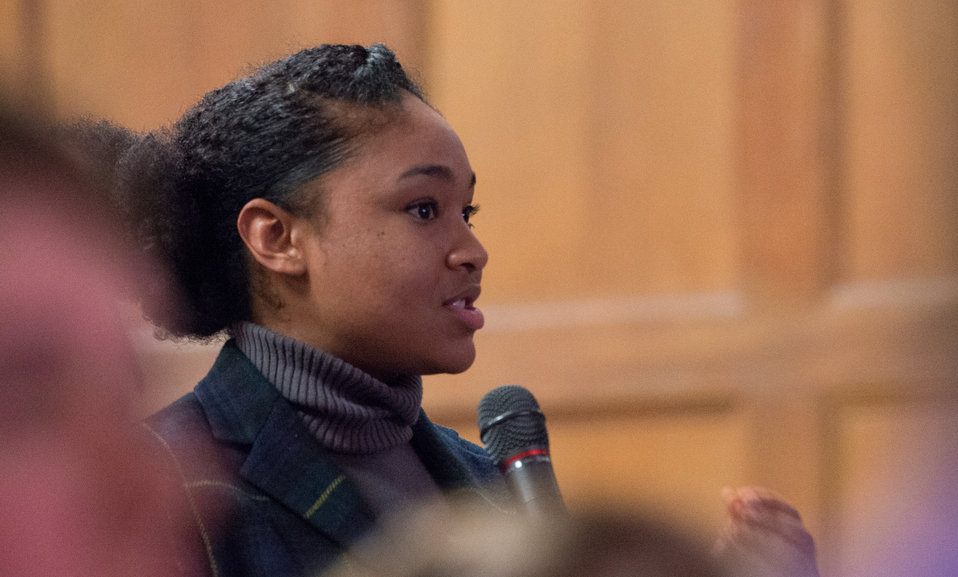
A student poses a question to the discussion panels at he Borlaug Symposium commemorating the late Dr. Norman Borlaug's 100th Birthday and vision, held in the Jefferson Auditorium of the U.S. Department of Agriculture (USDA) in Washington, D.C. on Tuesday, Mar. 25, 2014. The symposium highlights current efforts addressing global hunger. The symposium panels will feature high school and university students, as well as, scientists and policy advisors at Monsanto Chief Technology Officer Robb Farley talks about mobile communication and it's relationship to agriculture, at the Borlaug Symposium commemorating the late Dr. Norman E. Borlaug's 100th Birthday hosted by the U.S. Department of Agriculture (USDA) in the Jefferson Auditorium of USDA in Washington, D.C. on Tuesday, Mar. 25, 2014. The symposium will highlight current efforts addressing global hunger. The symposium panels will feature high school and university students, as well as, scientists and policy advisors at U.S. Agency for International Development (USAID), USDA and Non-Governmental Organizations (NGO). The symposium was planned in partnership with: U.S. Agency for International Development (USAID), Cornell University, Iowa State University, University of Minnesota, The Norman Borlaug Institute for International Agriculture, Texas A and M University, and the World Food Prize.